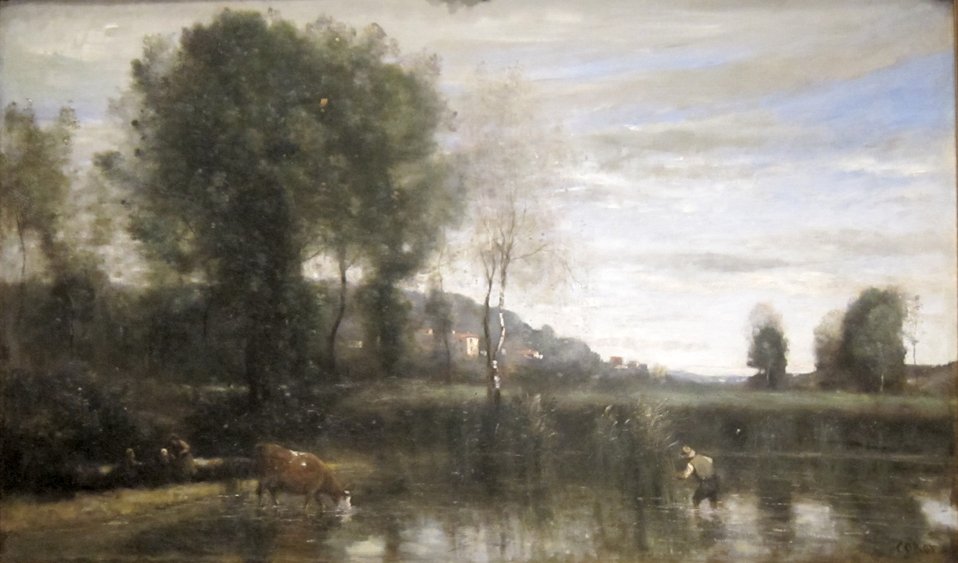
'Pond at Ville-d'Avray' by Camille Corot, late 1860s